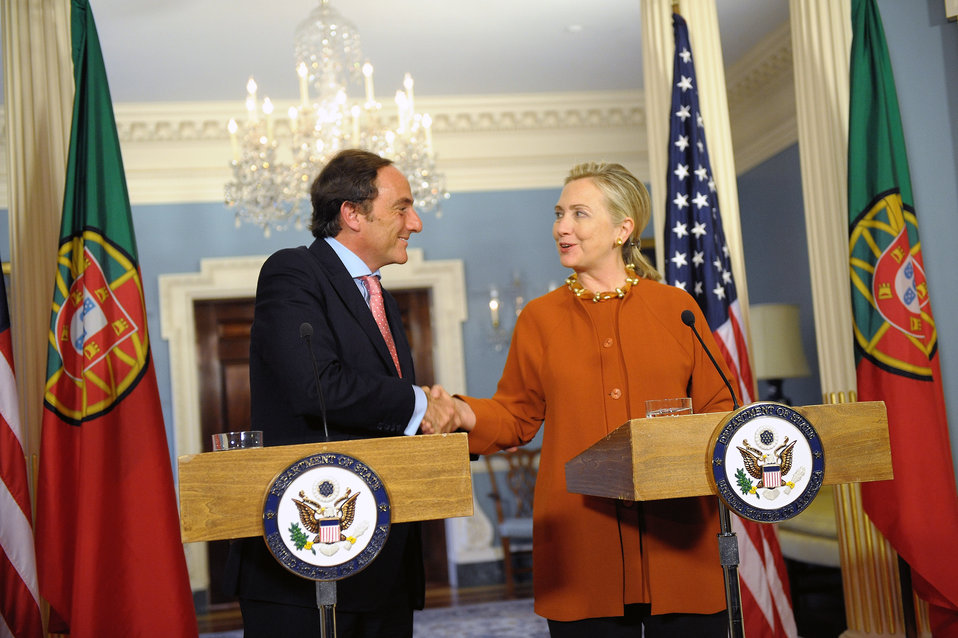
Secretary Clinton Shakes Hands With Portuguese Foreign Minister Portas

U.S. Secretary of State Hillary Rodham Clinton shakes hands with Portuguese Foreign Minister Paulo Portas after their joint press conference at the U.S. Department of State in Washington, D.C., in September 27, 2011.